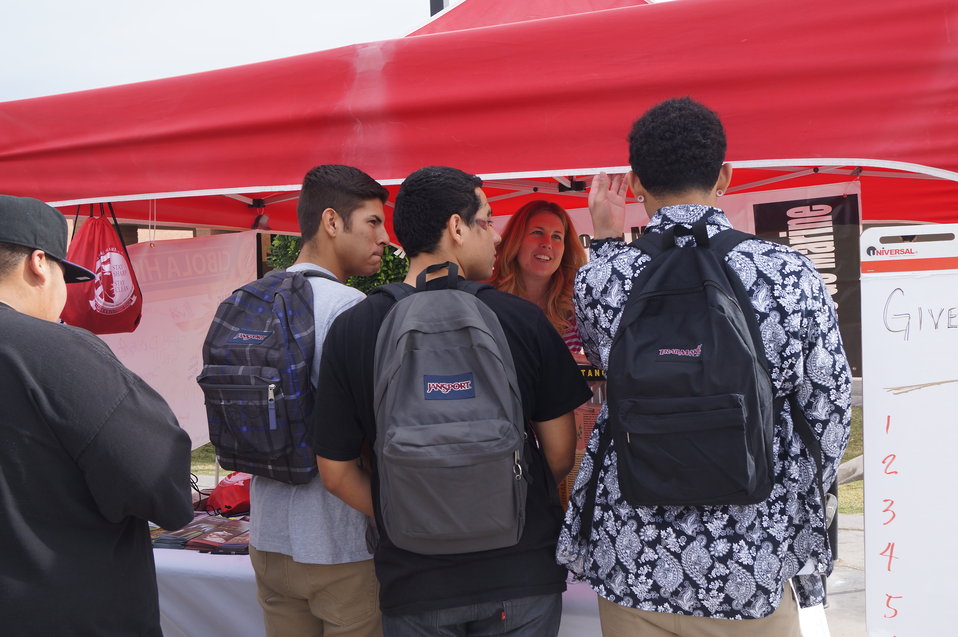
Nationa Drug Facts Week - CIBOLA HS

The Drug Demand Reduction Program out of Yuma, Arizona held numerous events at local schools to support NIDA's National Drug Facts Week, Jan. 27-Feb. 2 2014. Teens participated in drug awareness games, and helped to Shatter the Myths about teen substance abuse.